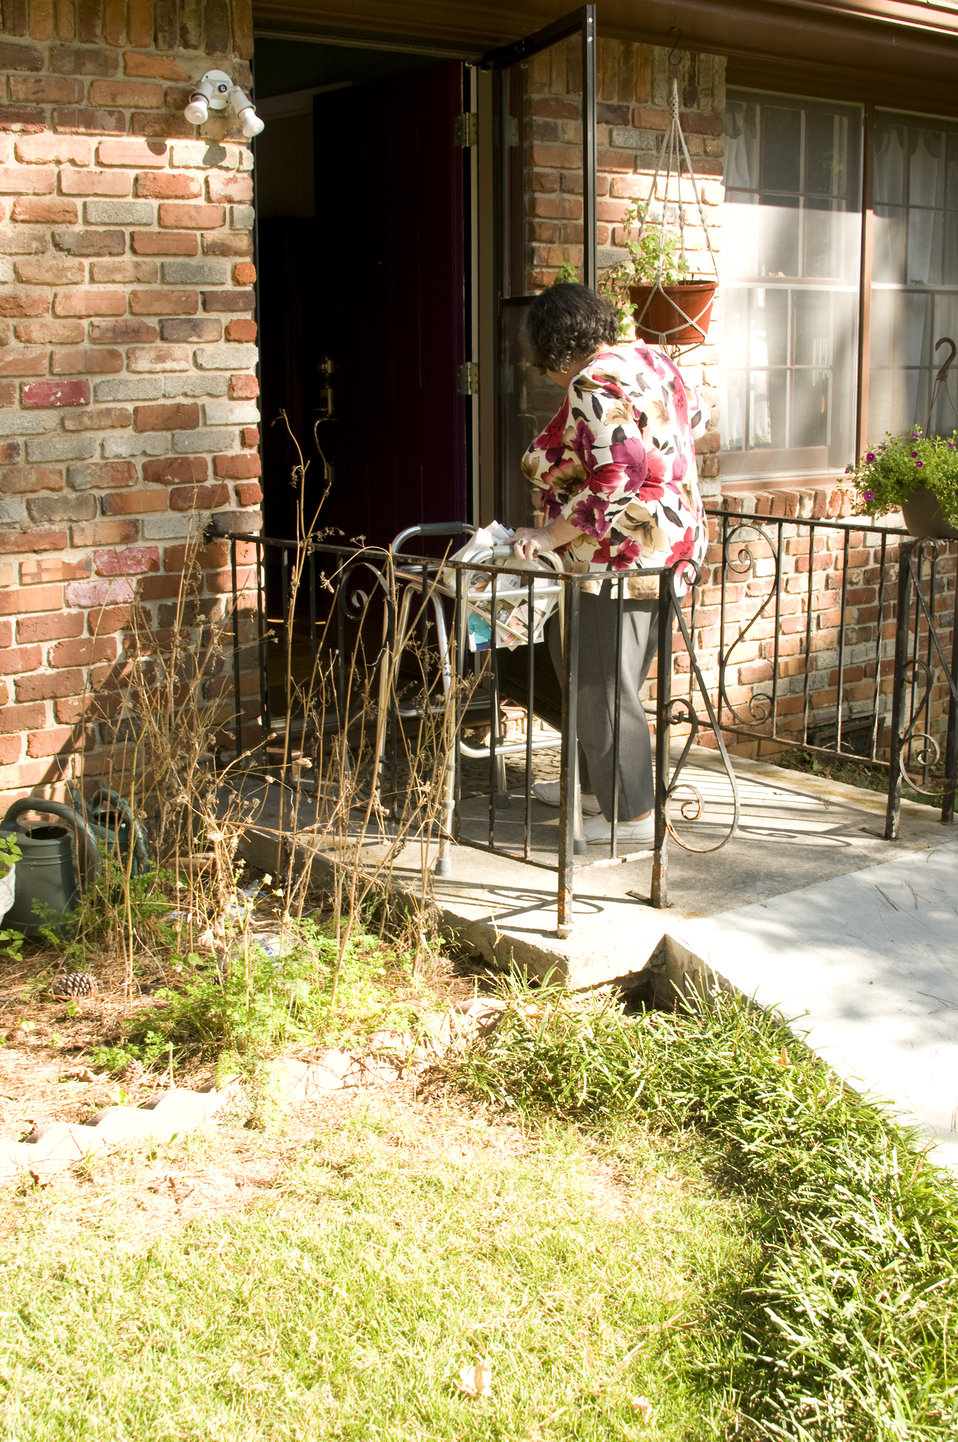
The woman pictured here is a rheumatoid arthritis patient, and is living with this disease, still doing her best to carry on with her day to day activities. With the help of her walker, she was shown retrieving her mail having gathered the mailings form the street-side mailbox. Having reached the front door of her Georgian home, she'd paused to open the outer screen door before crossing the home's threshold.